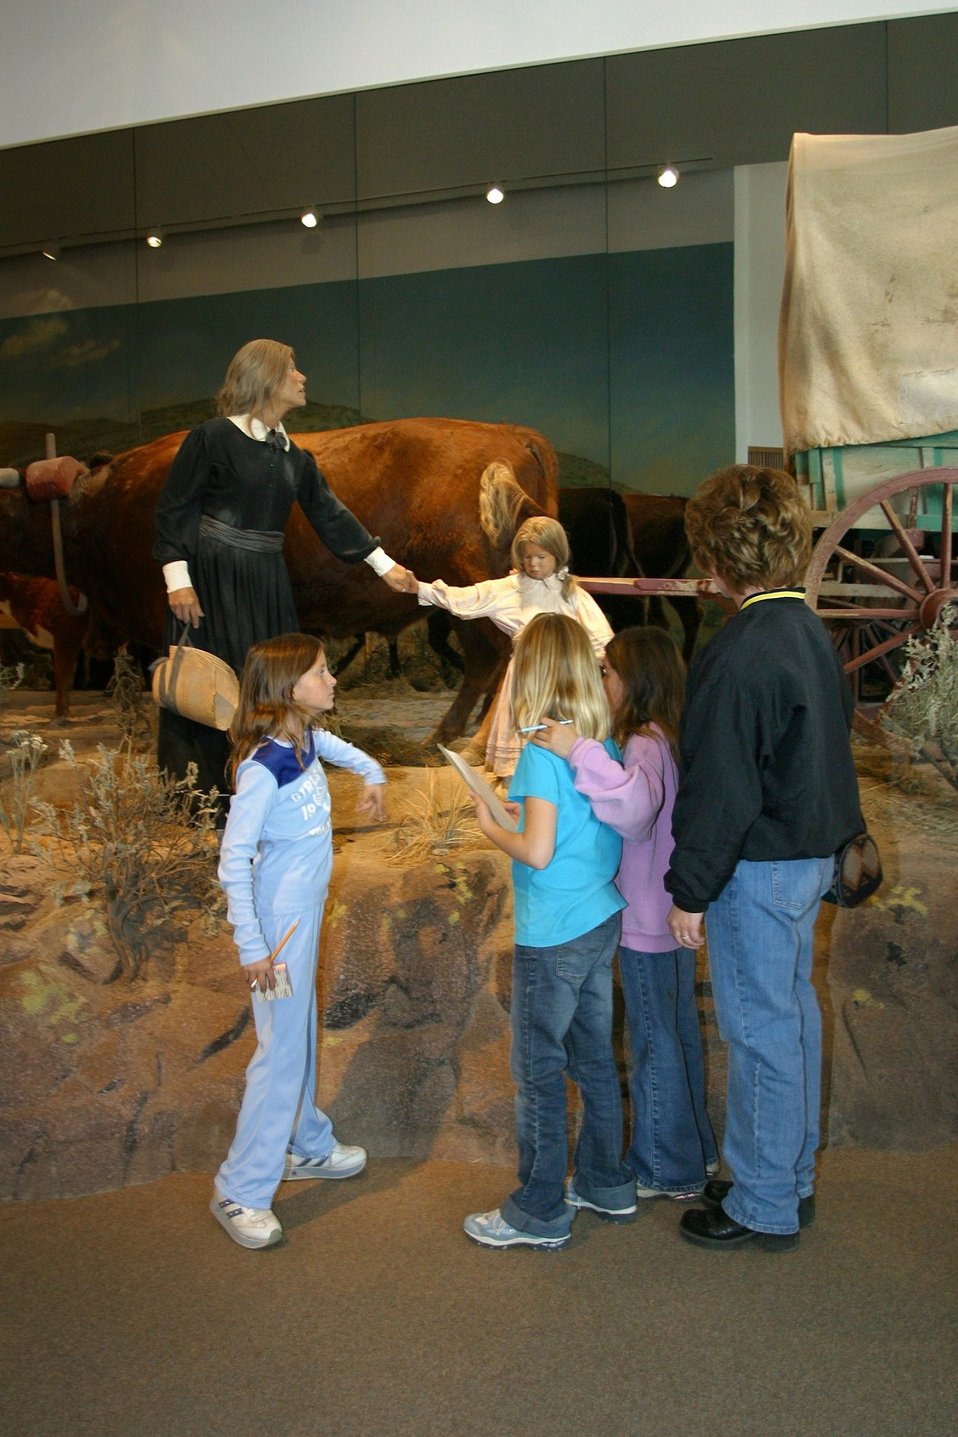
Hundreds of school children visit the National Historic Oregon Trail Interpretive Center every year.